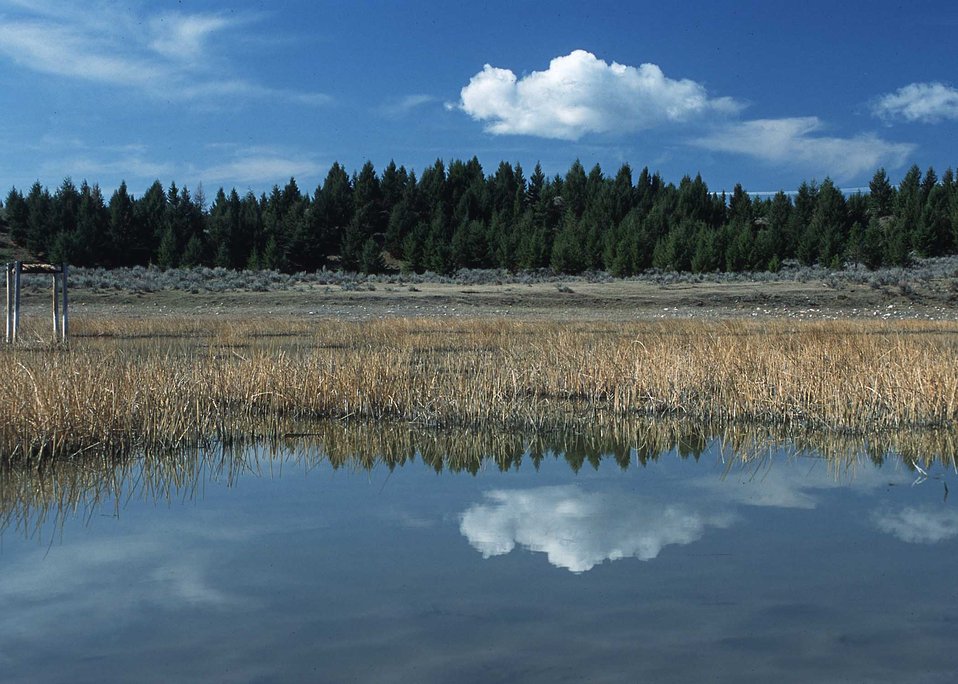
Scenic wetlands in northcentral Montana.